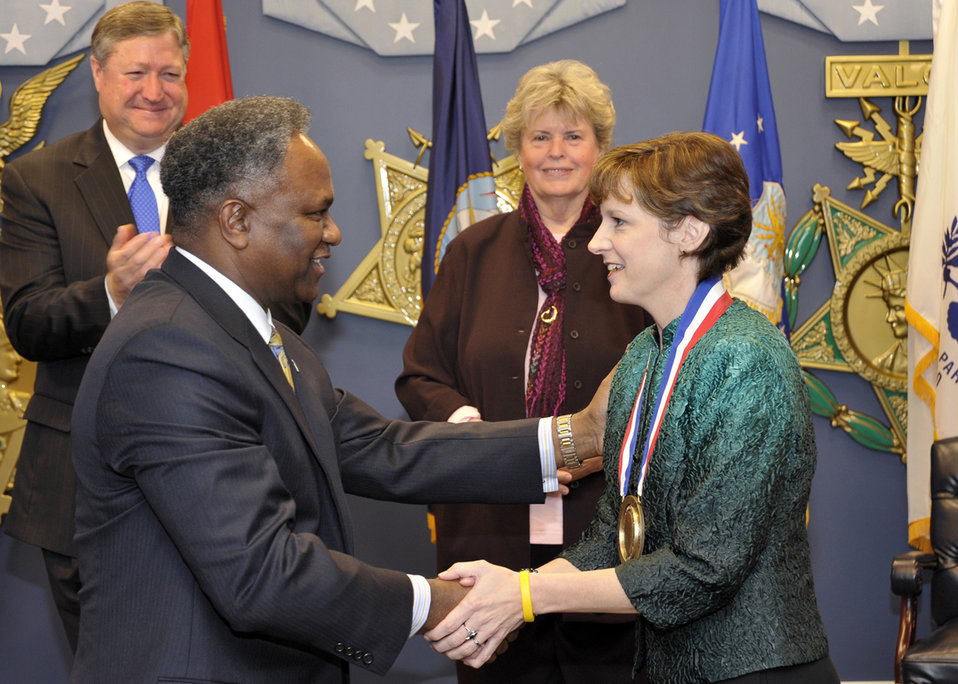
Spirit of Hope Award

Horace Larry, deputy director of Air Force Services, congratulates Virginia Dosedel, recipient of the Spirit of Hope Award, as Secretary of the Air Force Michael Donley and Linda Hope, daughter of Bob Hope, look on, Oct. 27, 2009, during a Pentagon ceremony.